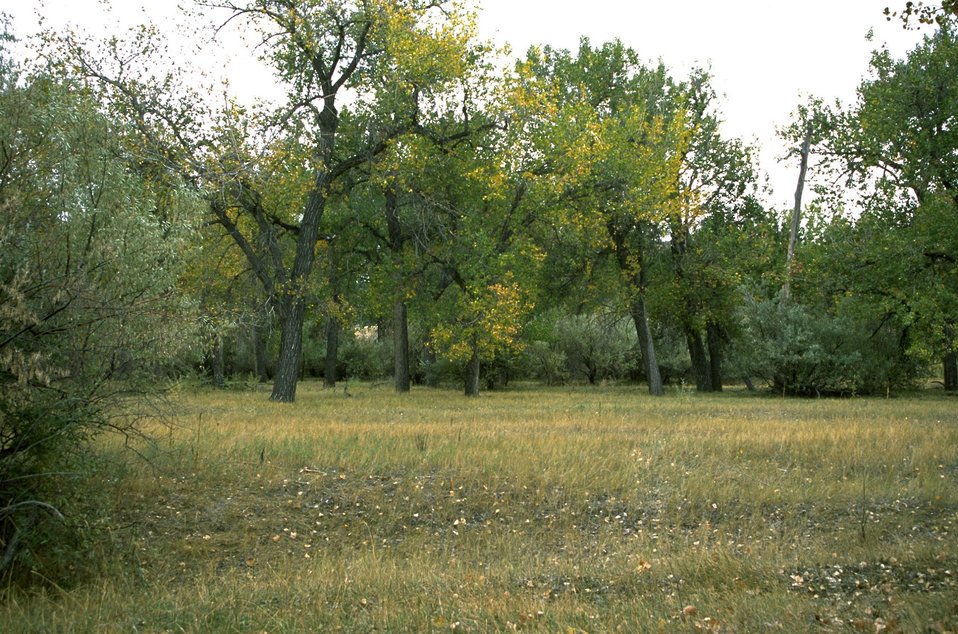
Cottonwood trees and grass at Howrey Island Recreation Area